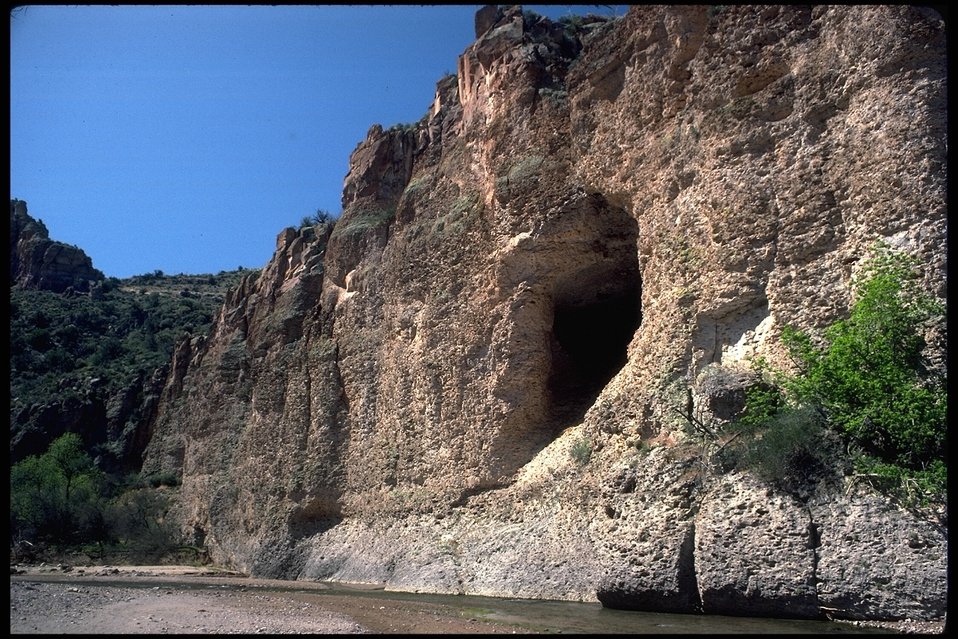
Tall Saguaro Cacti grow in a canyon in the Agua Fria National Monument.